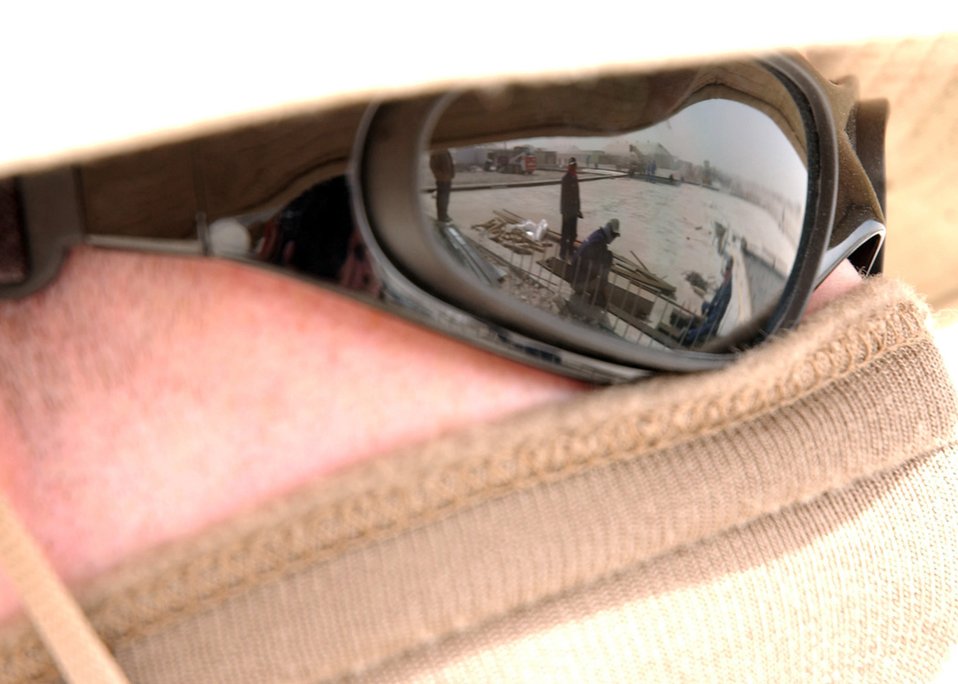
Operation Iraqi Freedom

SOUTHWEST ASIA (AFPN) -- Airman 1st Class Benjamin Riley watches third country national contractors build a new structure at a deployed location on Jan. 22. Airman Riley is a third country national escort with the 379th Expeditionary Civil Engineer Squadron, deployed from Barksdale Air Force Base, La.